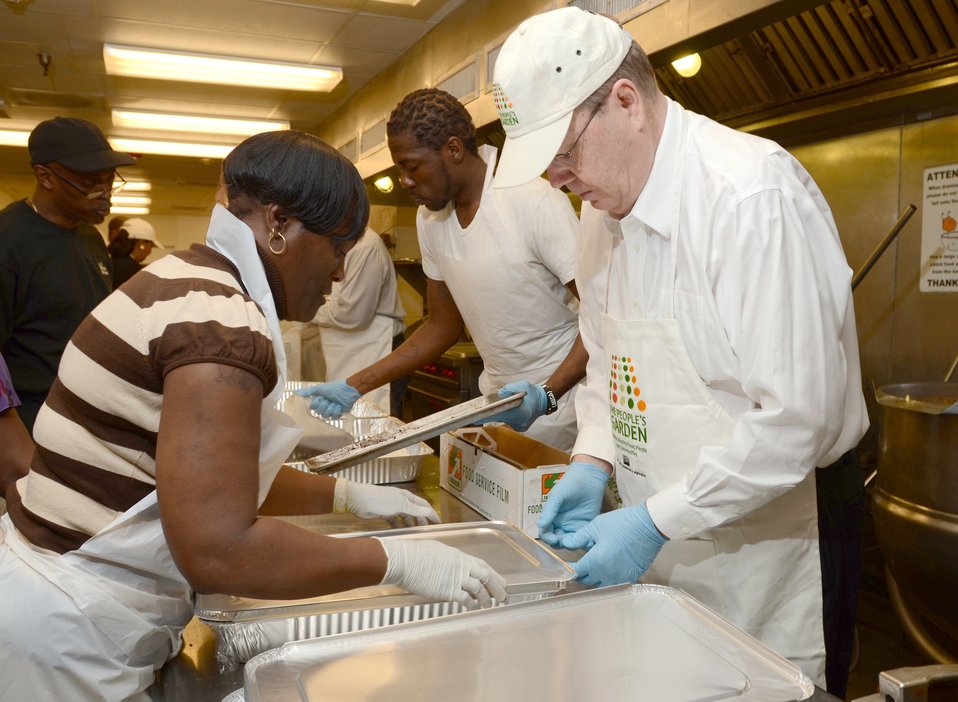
From left: Pauline McBride, Rural Development and Dallas Tonsager, Under Secretary for Rural Development help prepare the evening meal at the D.C. Central Kitchen during USDA’s National Service Day on January 12, 2012. NSD honors Dr. Martin Luther Kings’s contributions to the Civil Rights Movement. The D.C. Central Kitchen turns leftover food into millions of meals for thousands of at-risk individuals while offering nationally recognized culinary job training to once homeless and hungry adults.